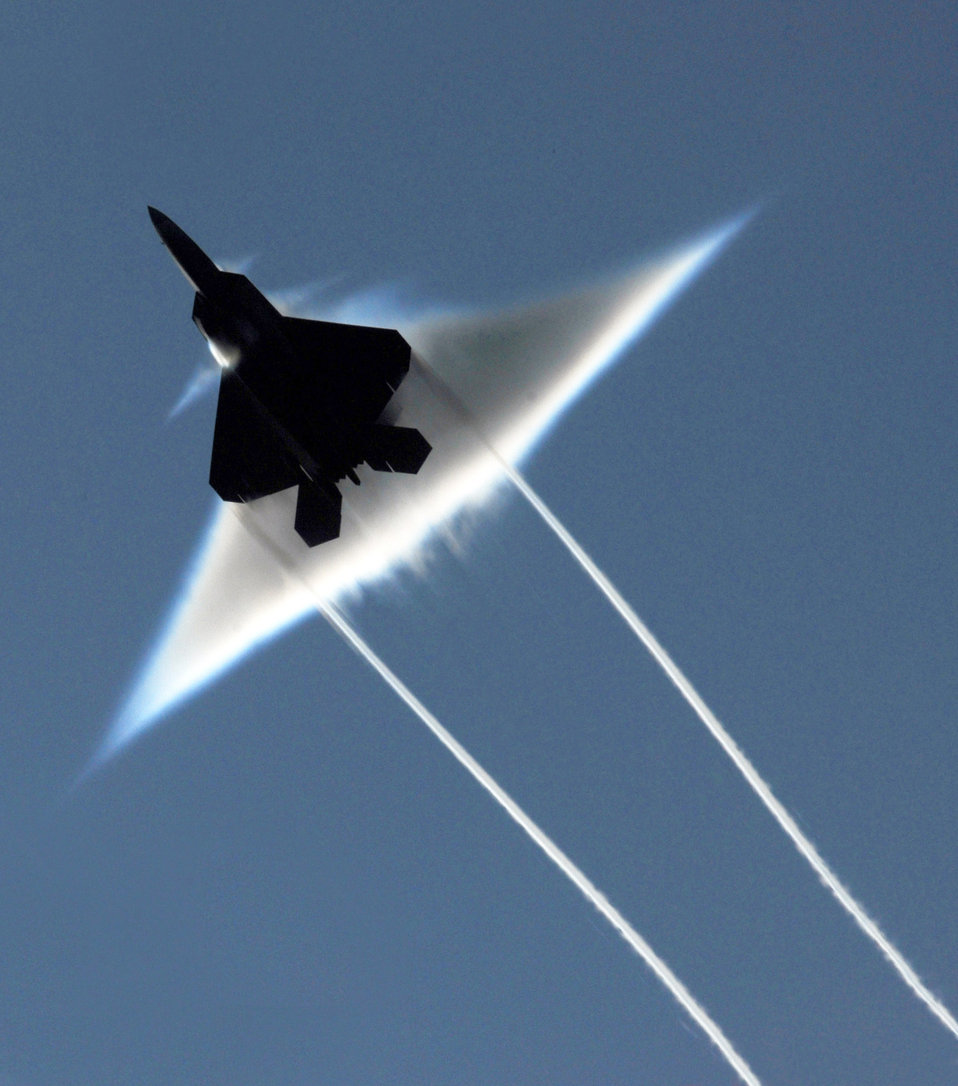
Going supersonic

An F-22 Raptor executes a supersonic flyby over the flight deck of the aircraft carrier USS John C. Stennis June 22 during Northern Edge 2009, a joint exercise in Alaska focusing on detecting and tracking units at sea, in the air and on land.